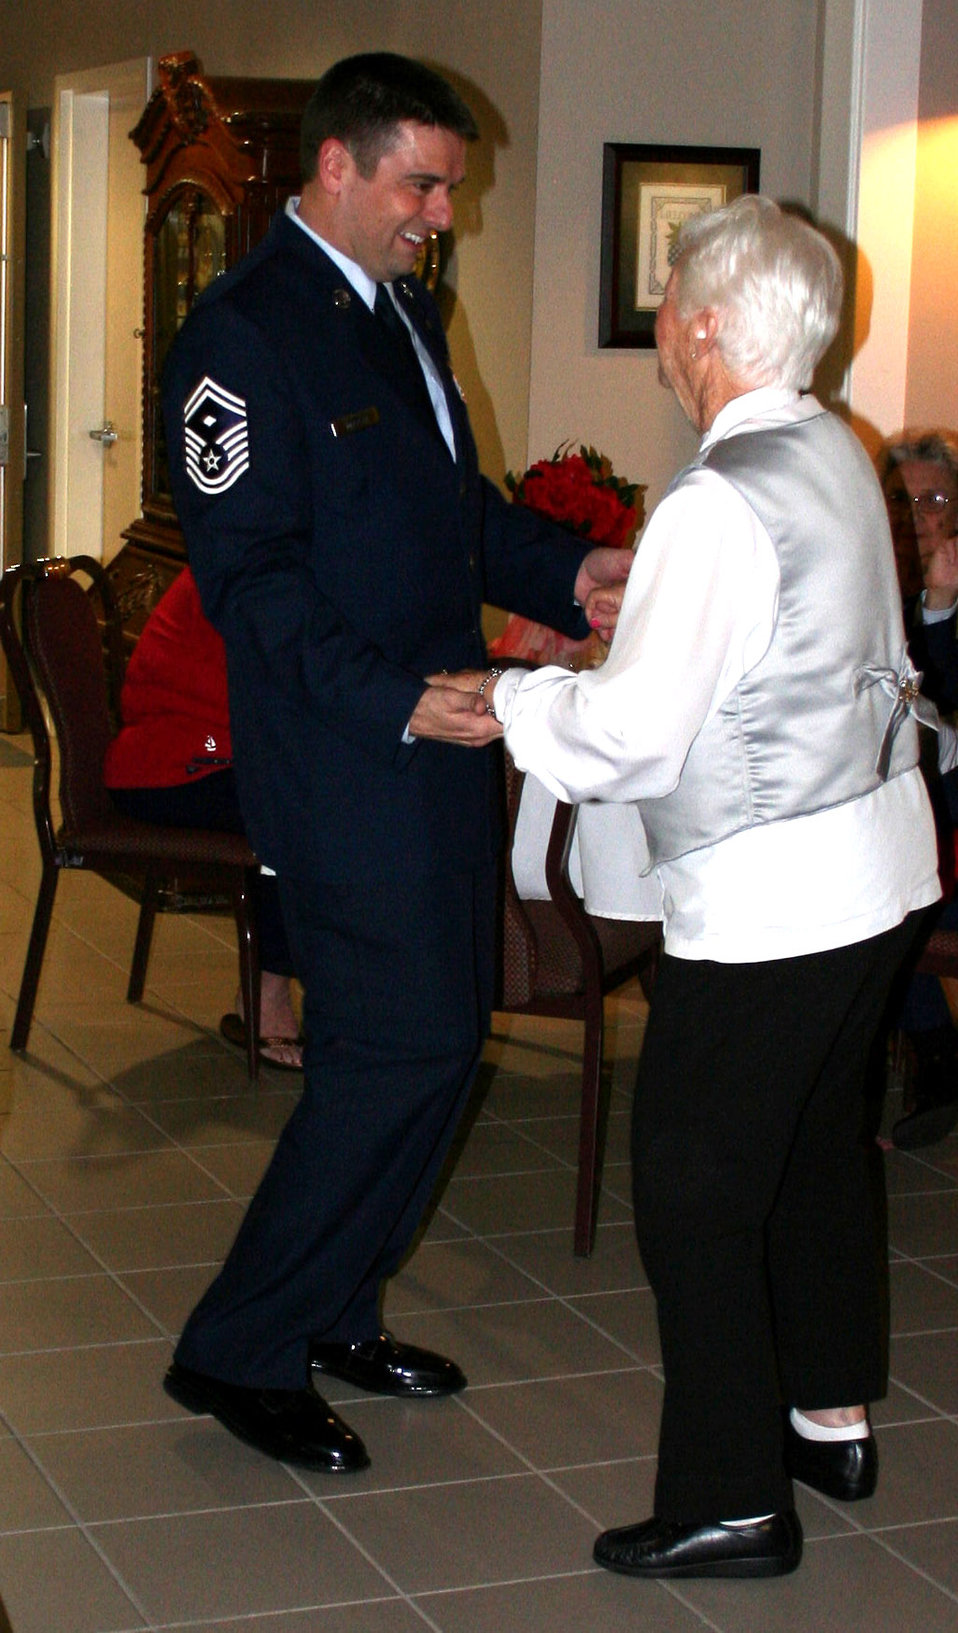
Airmen bring romance and roses to Air Force Enlisted Village

Senior Master Sgt. Scott Delveau dances with Harriet Curry during a special Valentine's Day Ball at the Air Force Enlisted Village's Hawthorn House in Shalimar, Fla.. More than thirty Airmen from nearby Hurlburt Field and Eglin Air Force Base joined residents Feb. 9 for the ball. Hawthorn House is the AFEV's assisted living residence.